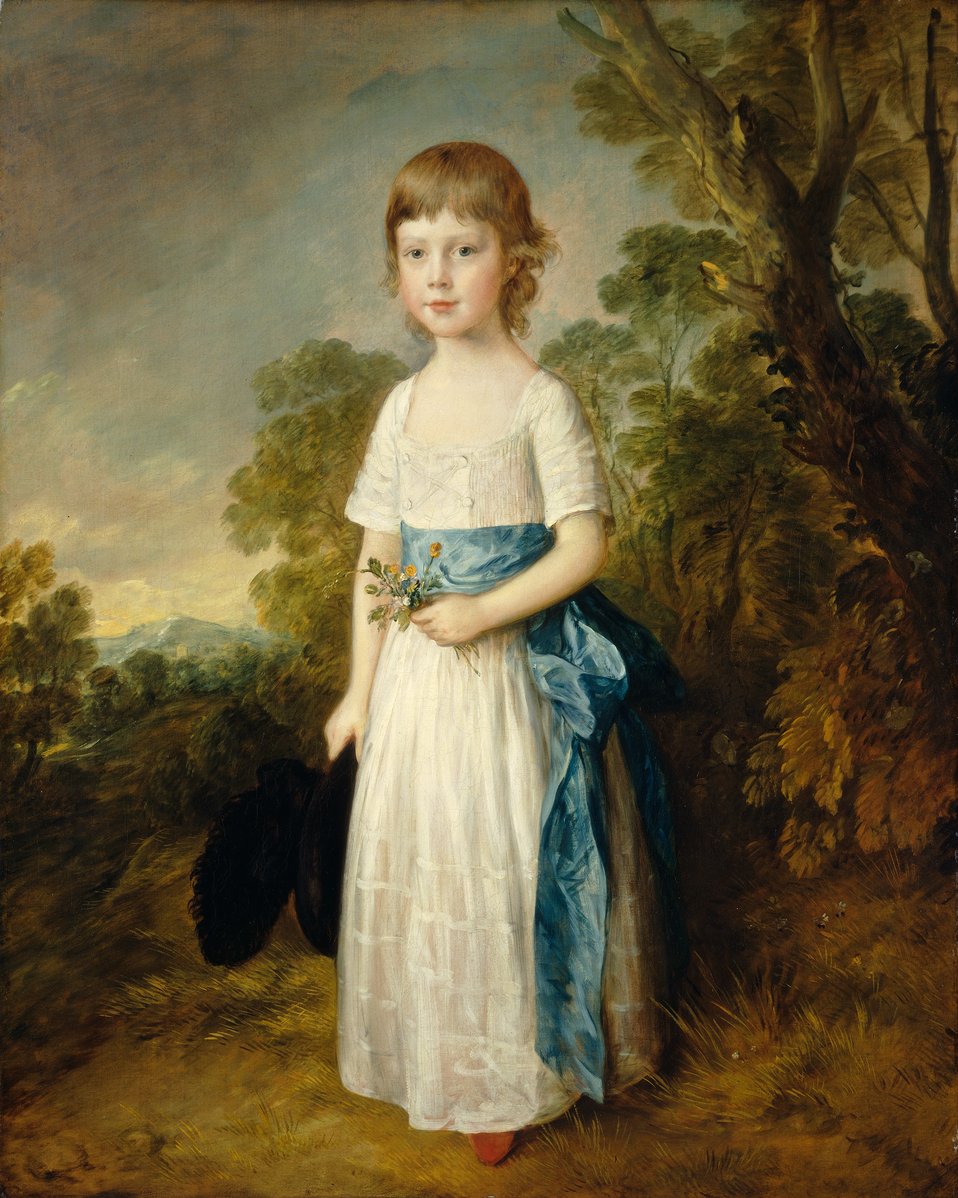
Thomas Gainsborough - Master John Heathcote - WGA8410